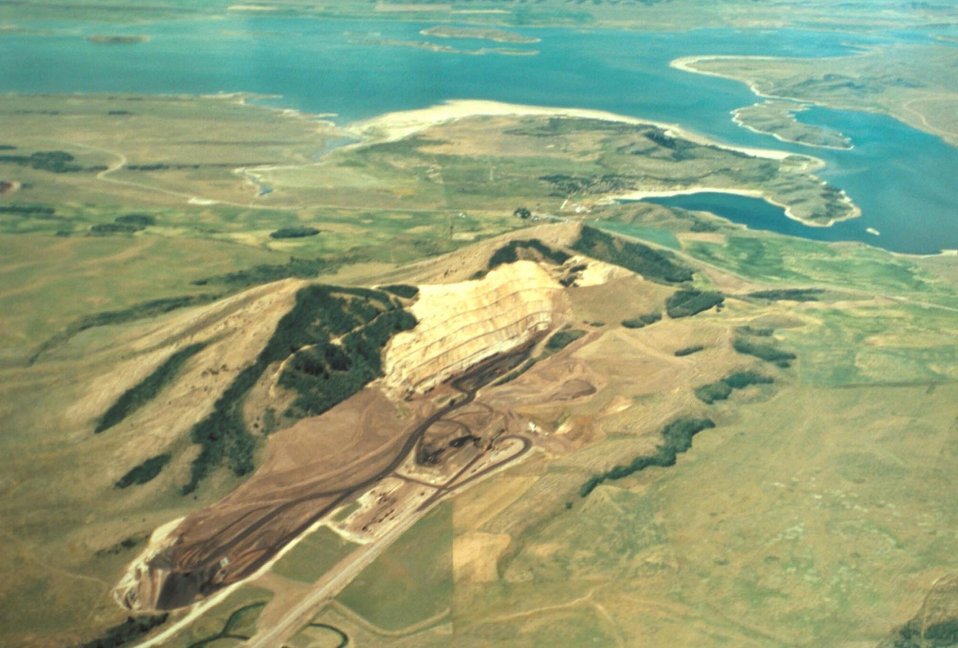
Monsanto Company North Henry Mines Pocatello Field Office USRD Upper Snake River District